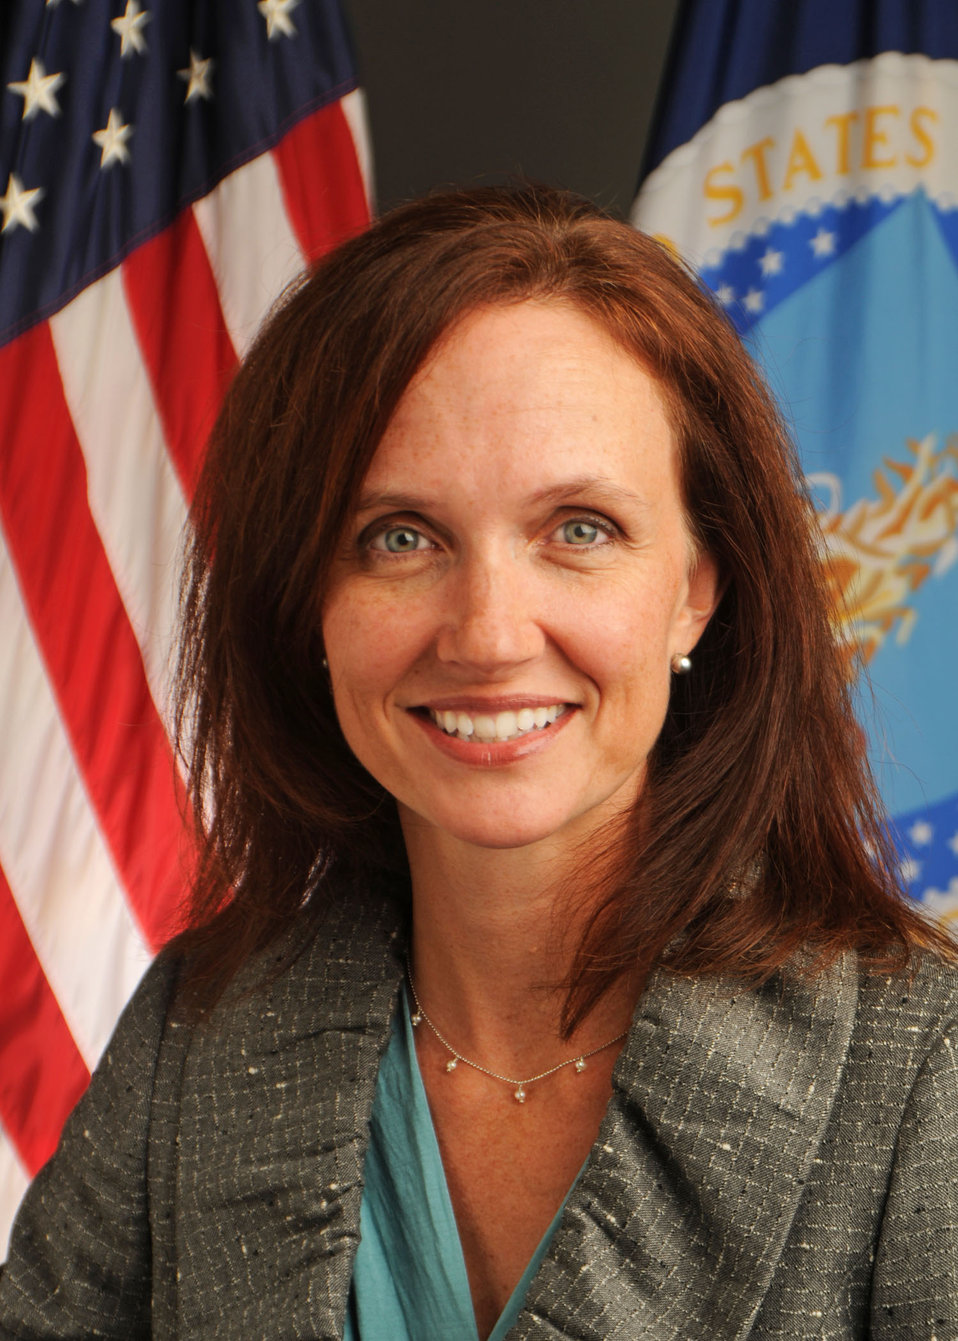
10di1101-0003 Under Secretary for Food Safety Inspection Service Dr. Elisabeth Hagen

Portrait of Dr. Elisabeth Hagen, Undersecretary for Food Safety and Inspection Service.